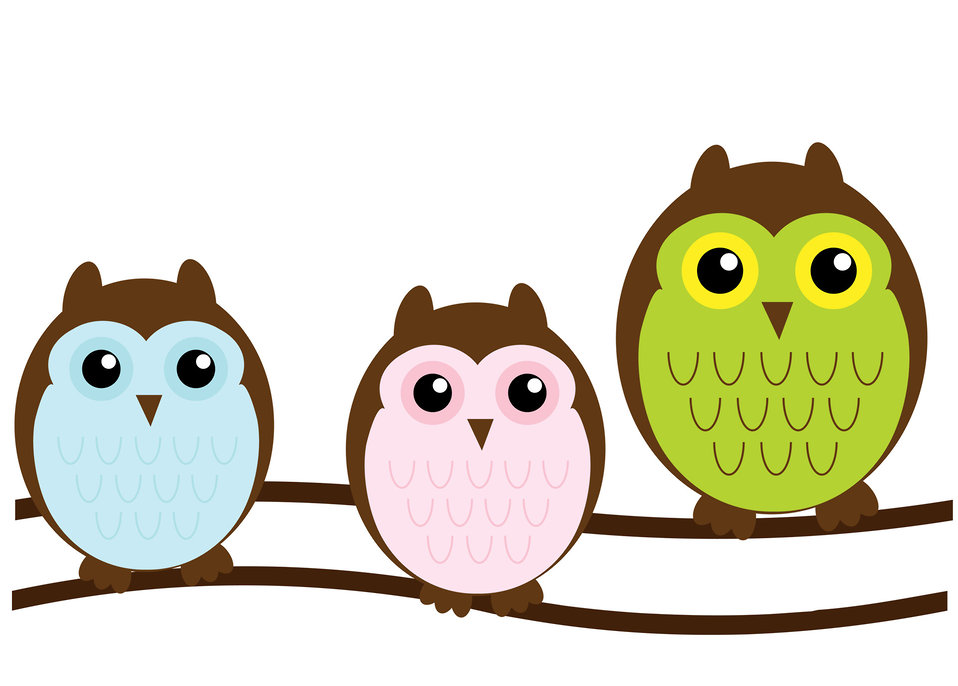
Owl family cute clipart

Cute owl family on the branch clipart for scrapbooking.